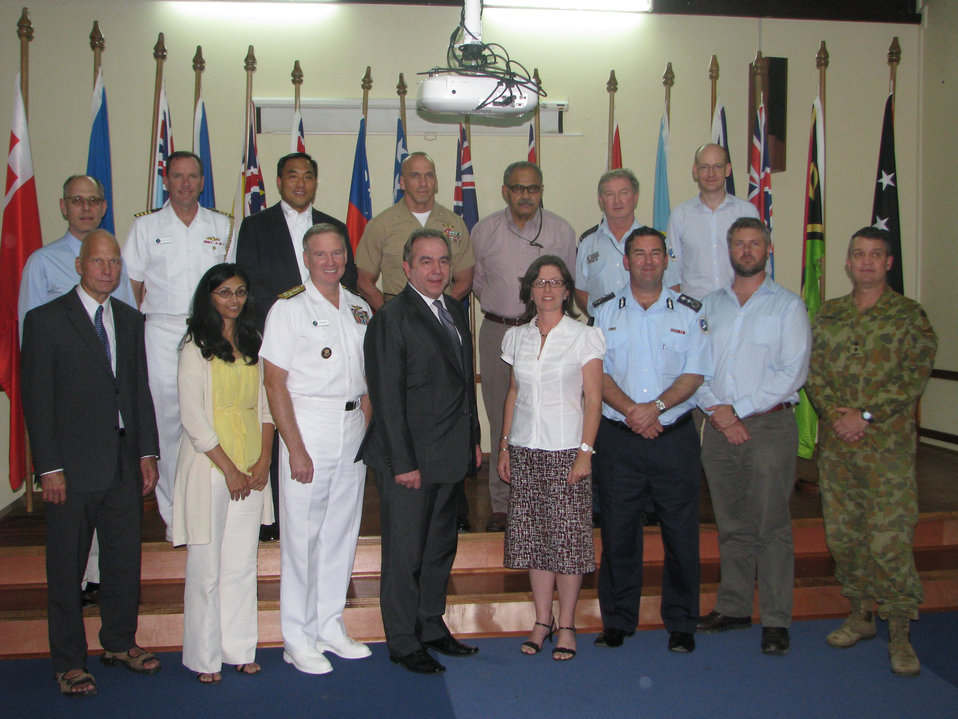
Assistant Secretary Campbell Poses for a Group Photo With the Regional Assistance Mission to Solomon Islands

Assistant Secretary of State for East Asian and Pacific Affairs Kurt Campbell, front row center left, poses for a group photo with the Regional Assistance Mission to Solomon Islands (RAMSI) in Honiara, Solomon Islands, on June 29, 2011. Assistant Secretary Campbell met with RAMSI leadership during a visit to Solomon Islands. He is leading a U.S. delegation on a visit throughout the South Pacific to engage in discussions to enhance bilateral political, economic, and security relations in the region. The delegation includes Adm. Patrick Walsh, commander of U.S. Pacific Fleet, right, Office of the Secretary of Defense South/Southeast Asia Principal Director, Marine Corps Brig. Gen. Richard Simcock, right center, and U.S. Agency for International Development (USAID) Assistant Administrator Nisha Biswal, not pictured.